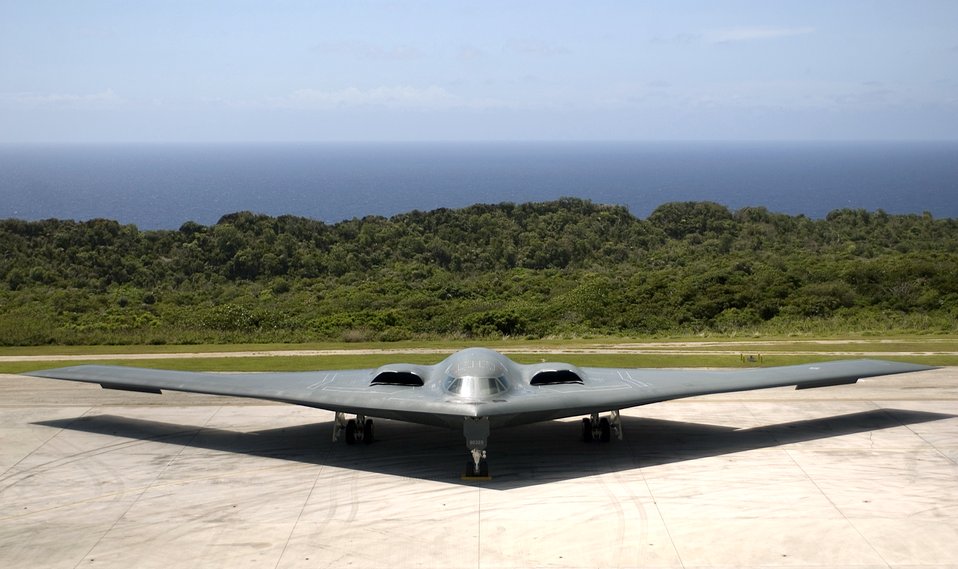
The

ANDERSEN AIR FORCE BASE, Guam -- A B-2 Spirit stealth bomber deployed from the 393rd Bomb Squadron at Whiteman Air Force Base, Mo., waits on the flightline here. The B-2 Spirits and more than 270 personnel from the 393rd Bomb Squadron are deployed here in support of Pacific Command's continuous bomber presence in the Asia-Pacific region, enhancing regional security and the U.S. commitment to the Western Pacific.